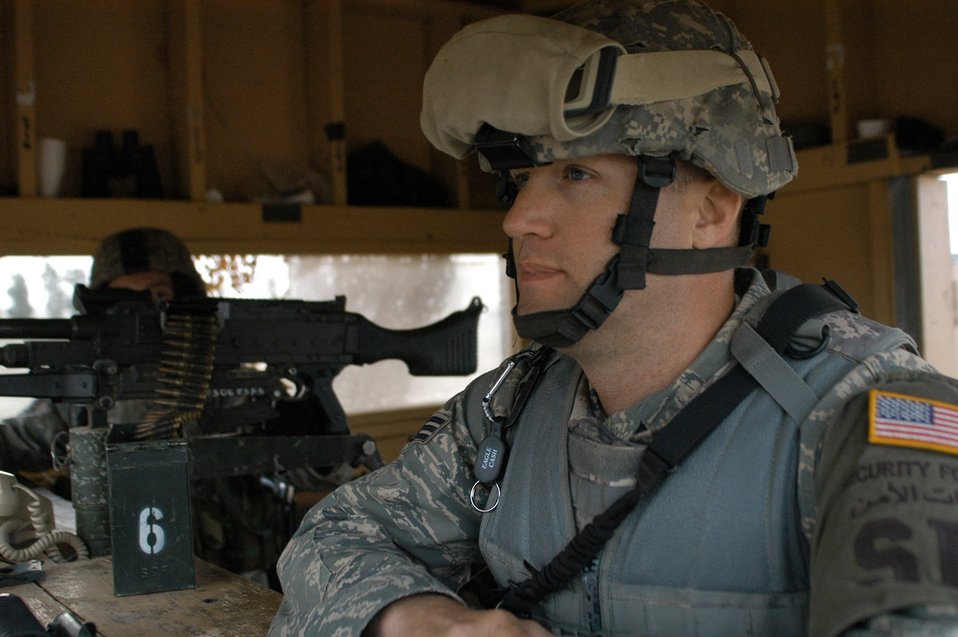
Deployed defenders show AF mission is more than just aircraft

Senior Airman Anson Pryde, 506th Expeditionary Security Forces Squadron at Kirkuk Regional Air Base, Iraq, pays close attention to his surroundings from one of the base's many guard towers. While typical perceptions associated with the Air Force in combat might involve aircraft dropping bombs on targets, the several hundred security forces Airmen deployed here are proving these stereotypes outdated.